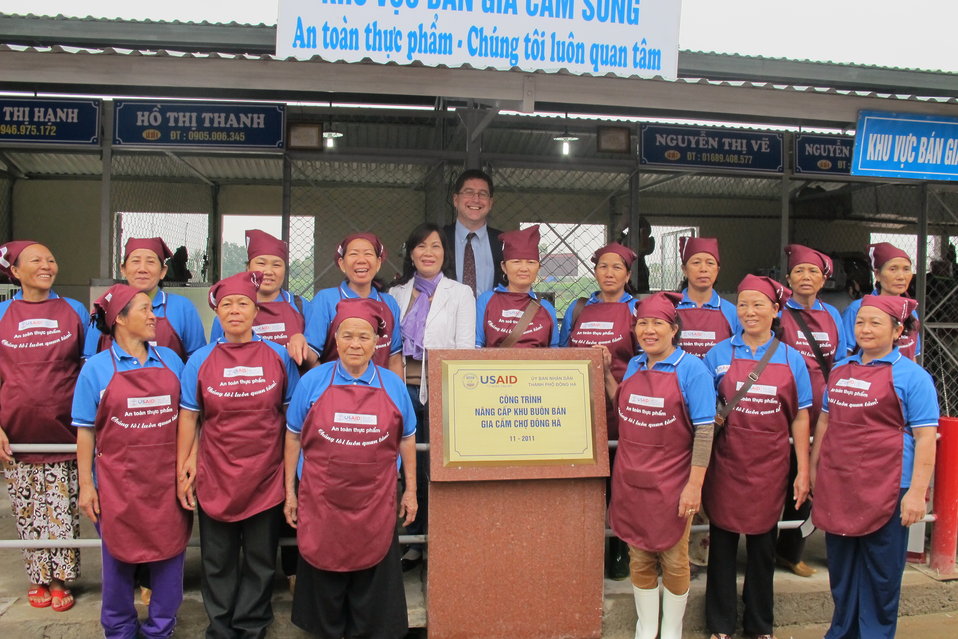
Promoting Hygiene and Sanitation at Dong Ha Poultry Market